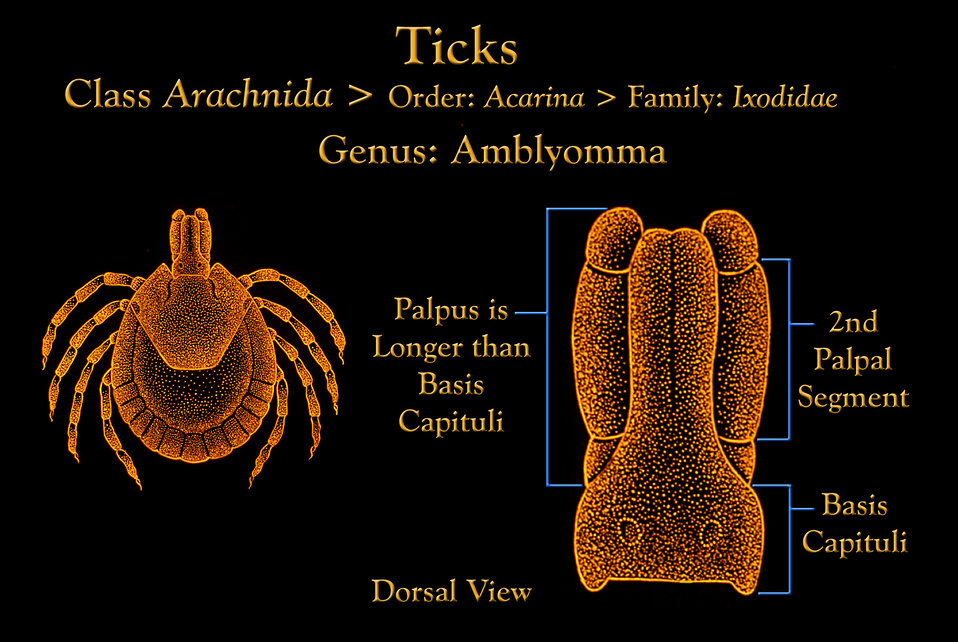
This drawing depicts some of the anatomic characteristics displayed by ticks that are members of the genus Amblyomma.